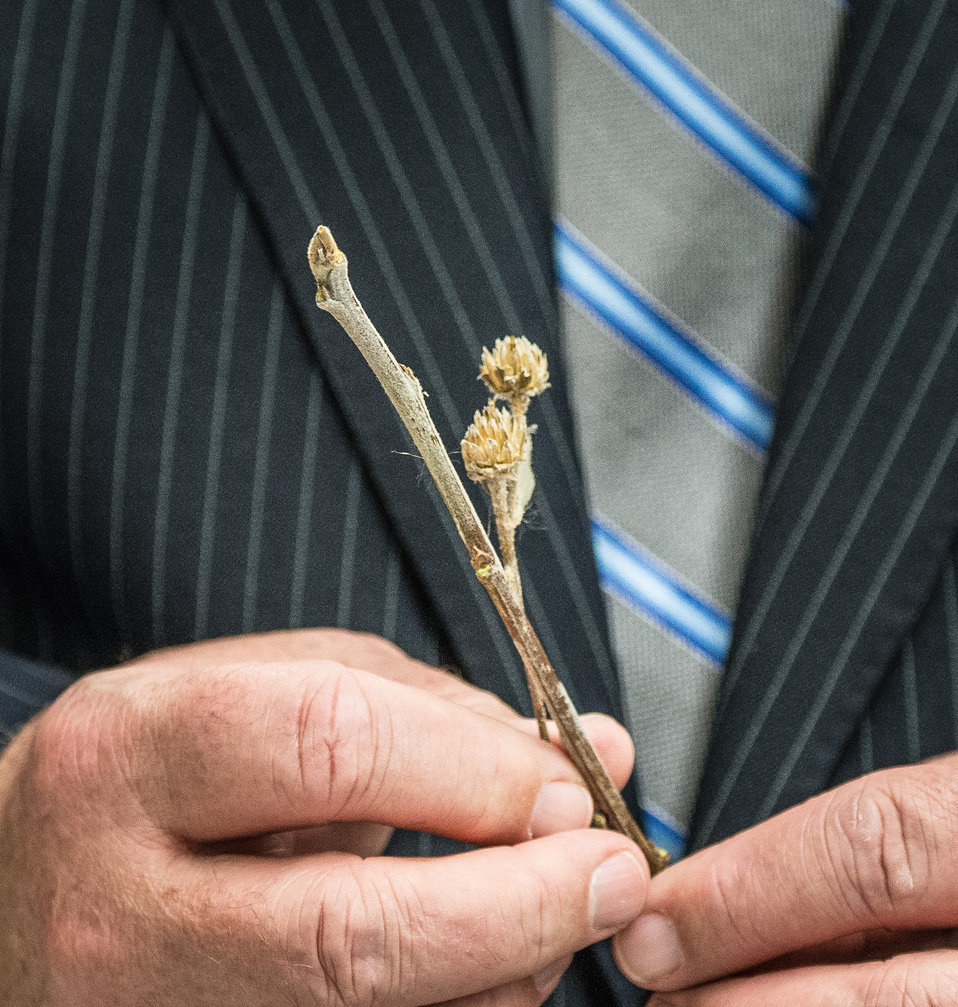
Agriculture Secretary Tom Vilsack holds a plant sample at the U.S. Department of Agriculture (USDA), Agriculture Research Service (ARS), National Center for Genetic Resources Preservation (NCGRP), Plant Germplasm Preservation Research Unit (PGPRU), during his visit to the NCGRP, in Ft. Collins, CO, on Wednesday, Nov. 6, 2013.